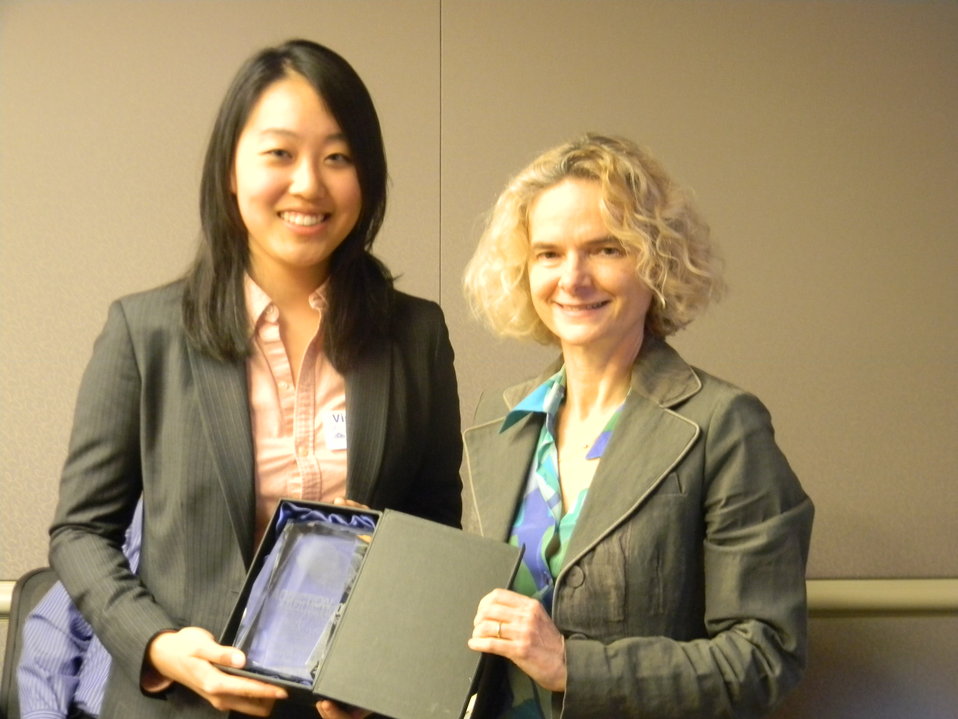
Sarah Pak and NIDA Director Dr. Nora Volkow

2011 Addiction Science Award Winner Sarah Pak (1st place) and NIDA Director Dr. Nora Volkow